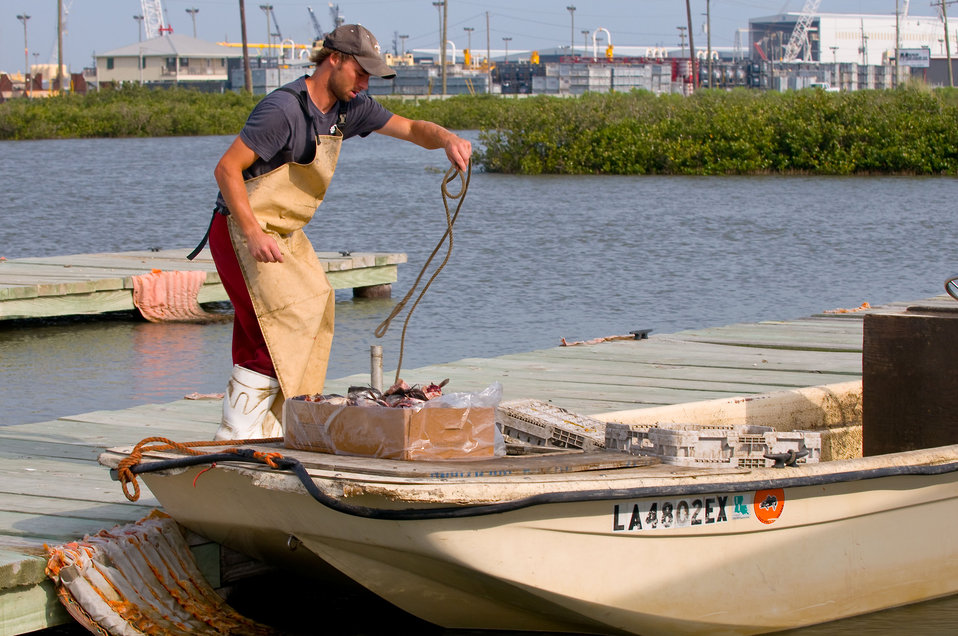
May 14, Cody Fonseca, Lafourche, La sets out for a day of crabbing

Cody Fonseca, Lafourche, La, sets out for a day of crabbing while he still can.